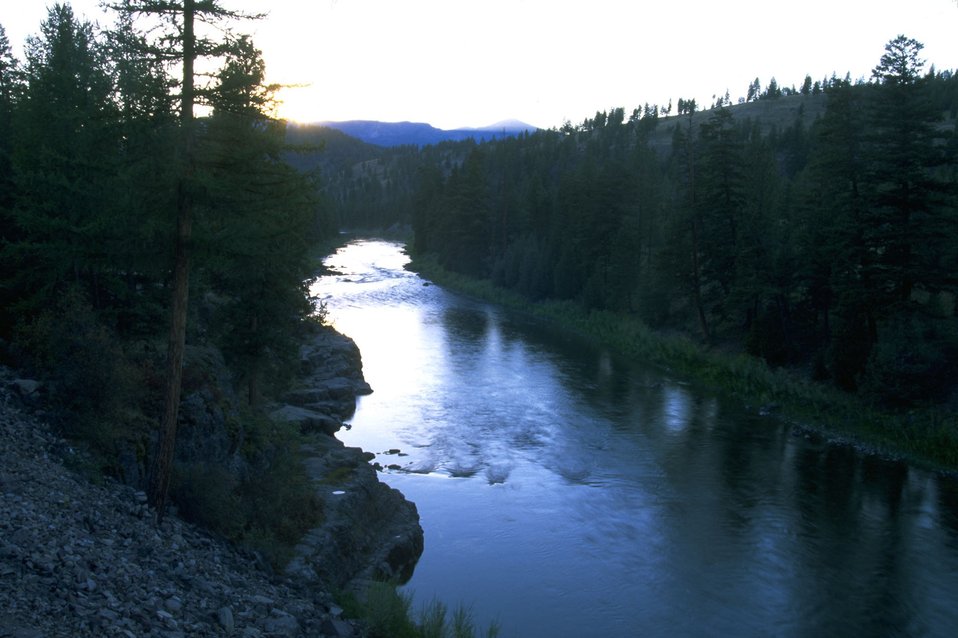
Early morning on the Blackfoot River